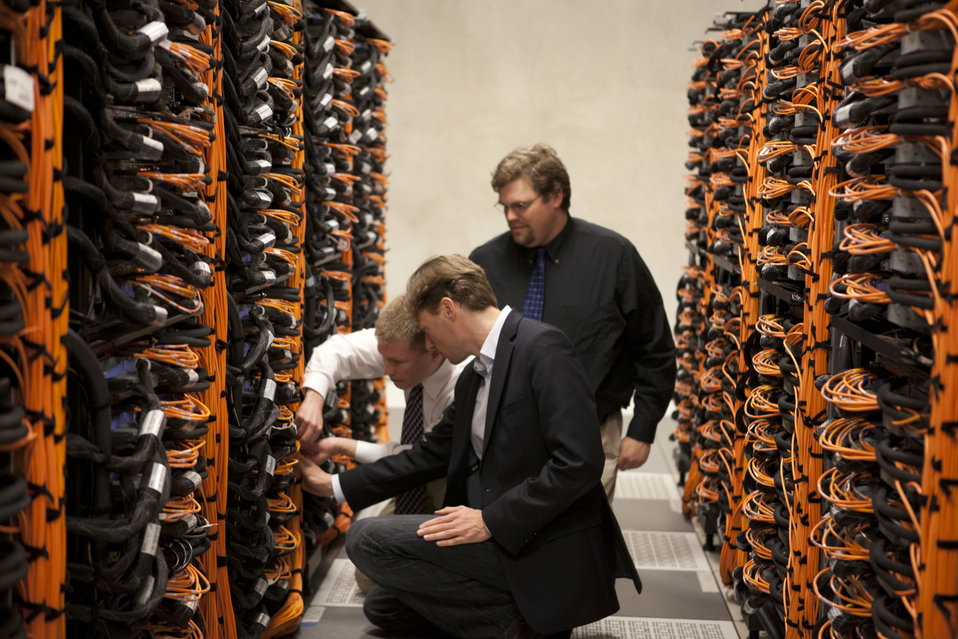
At Argonne National Laboratory, staff works on MIRA's stacks.

An engineering marvel, the 10-petaflops machine is a capable of carrying out 10 quadrillion calculations per second. The Argonne Leadership Computing Facility is committed to delivering 786 million core scientists each year.